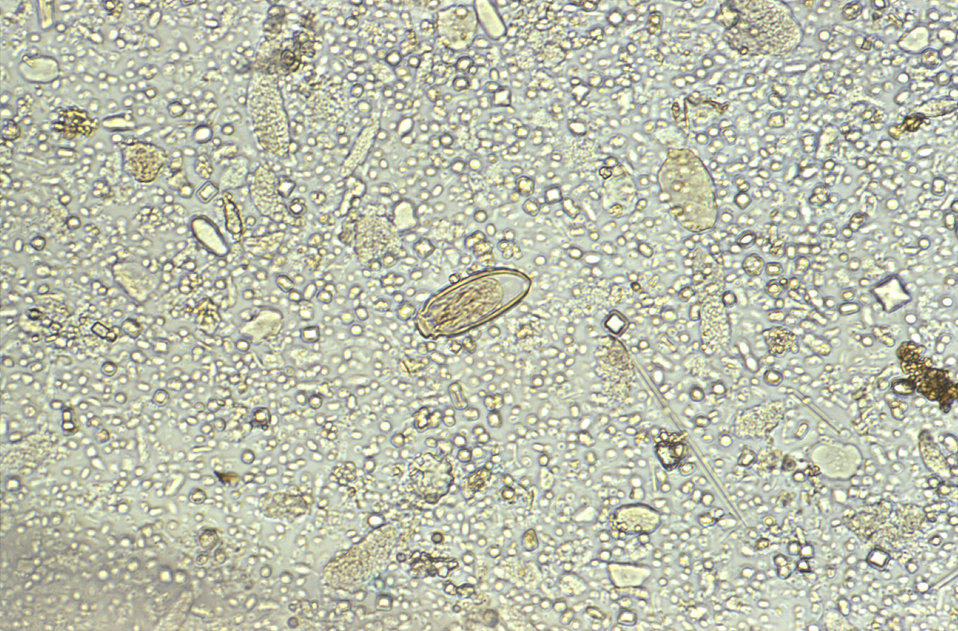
Magnified 400X, this photomicrograph revealed the presence of an artifactual finding, which resembles a trematode egg of the Chinese, or oriental liver fluke, Clonorchis sinensis.